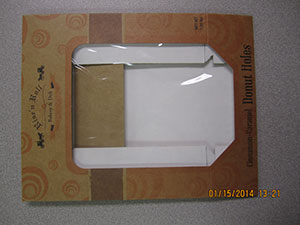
RECALLED – All Varieties of Donuts, Cinnamon Donut Holes, and Mixed Nut Candy

January 17, 2014 – Product Recall – Rise’N Roll Bakery Issues Allergy Alert on Undeclared Egg in All Their Donut Varieties and Undeclared Peanuts in Nutty Crunch.